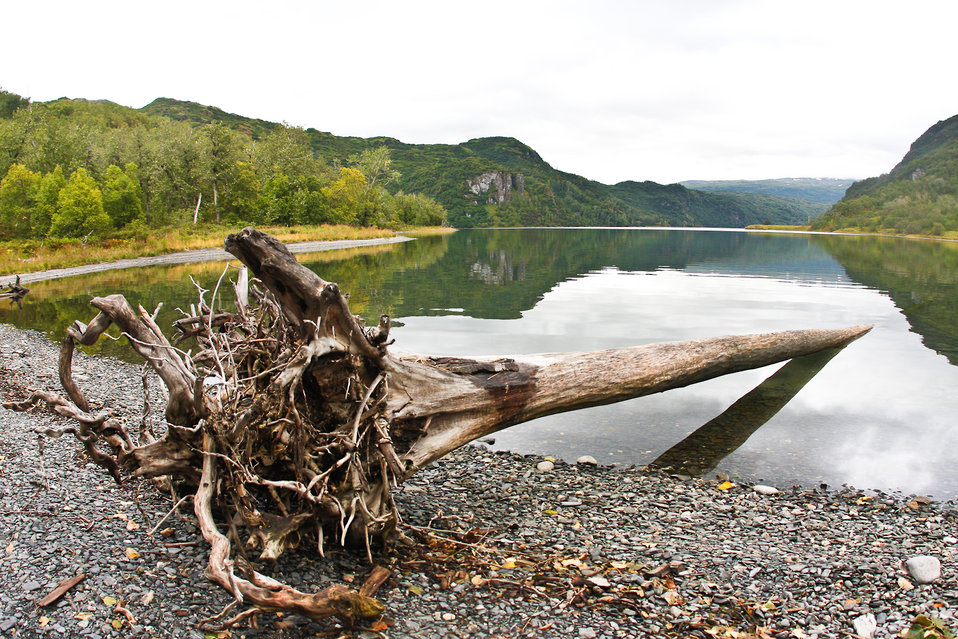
Driftwood on Uganik Lake

Lisa Hupp/USFWS